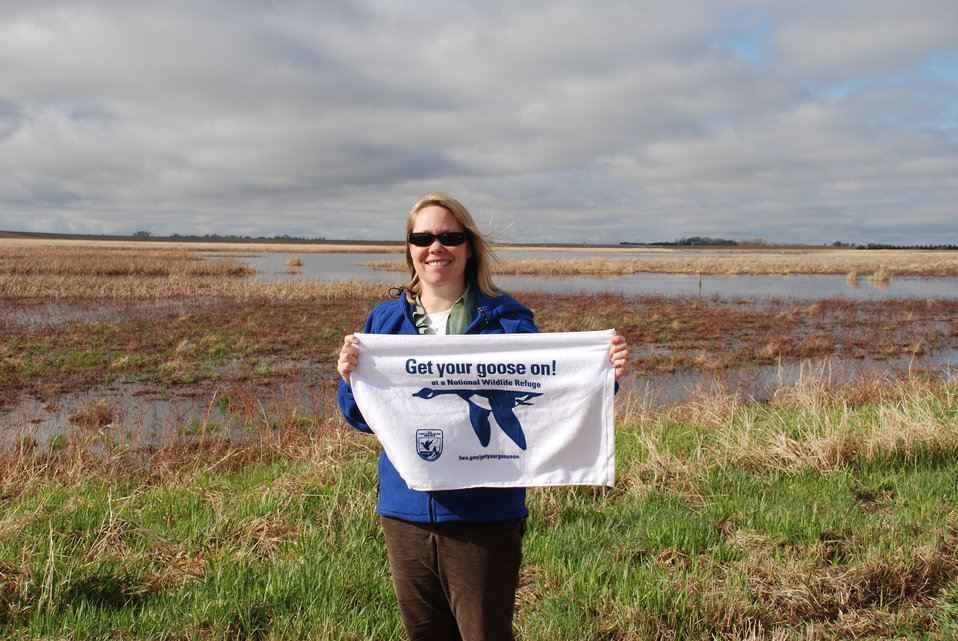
Get Your Goose On! at the Rainwater Basin Wetland Management District

Noreen Walsh, USFWS Deputy Regional Director for the Mountain-Prairie Region, gets her goose on at the Rainwater Basin Wetland Management District.